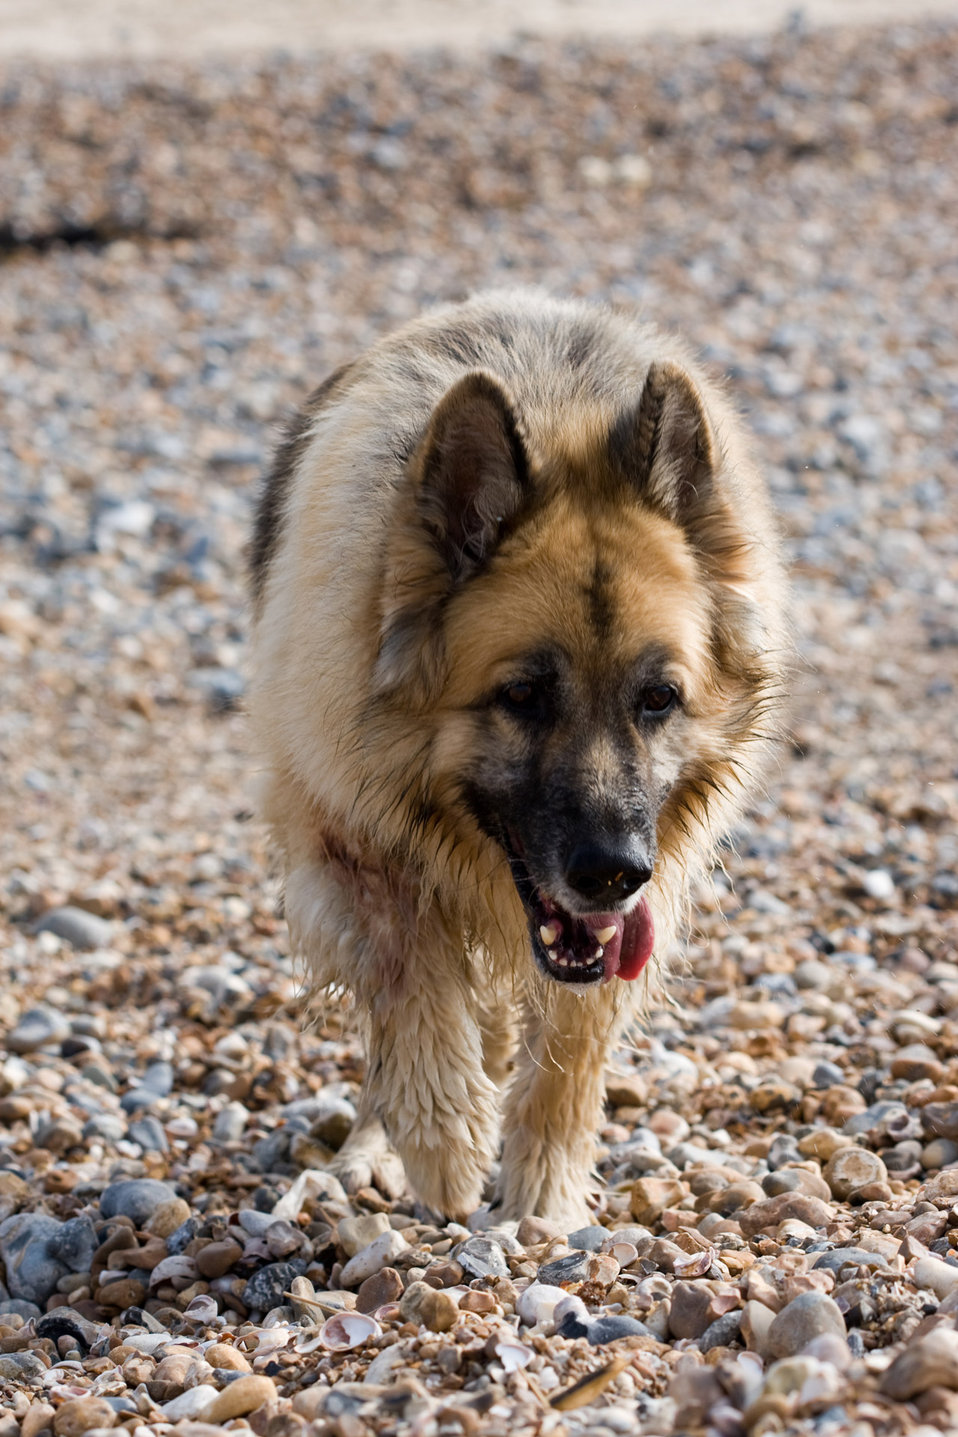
German shepherd dog, alsatian in close-up.